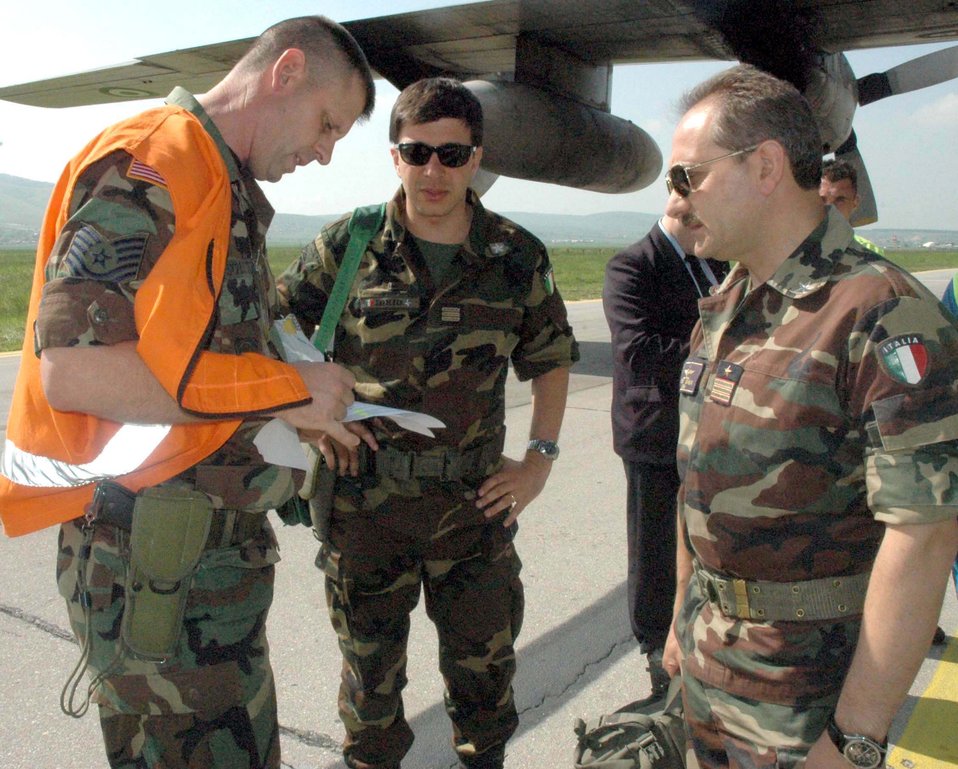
Airman helps people arrive, depart Kosovo

PRISTINA, Serbia and Montenegro -- Tech. Sgt. Tony Schuster (left) greets Italian soldiers May 26 at the airport here. Sergeant Schuster coordinates all flights in and out of Kosovo for coalition servicemembers here. He is NATO's channel flight coordinator and is deployed from the Nevada Air National Guard in Reno.